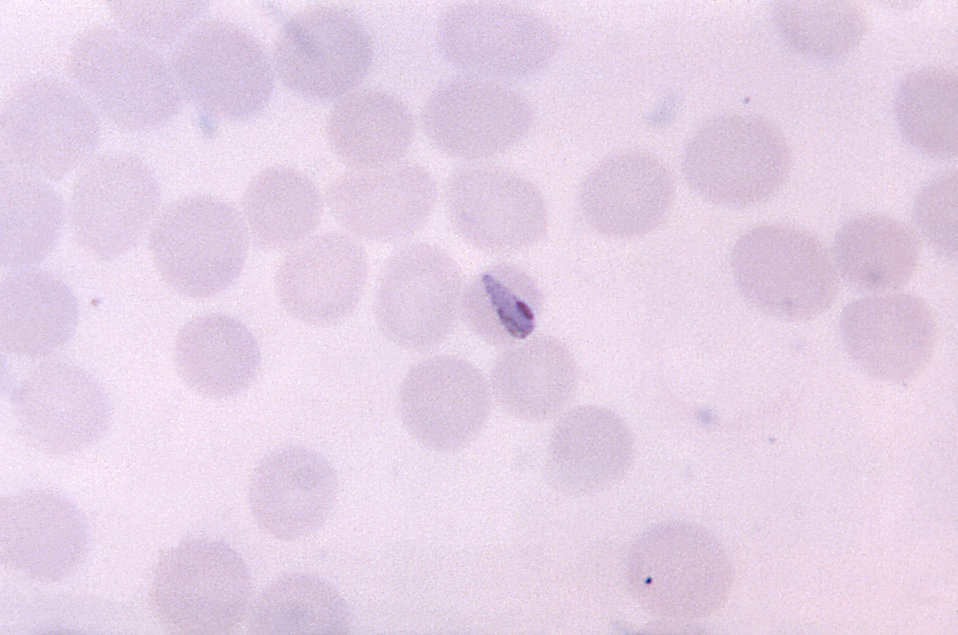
This thin film photomicrograph depicts a growing P. malariae 'bond form' trophozoite amongst smaller than normal RBCs.